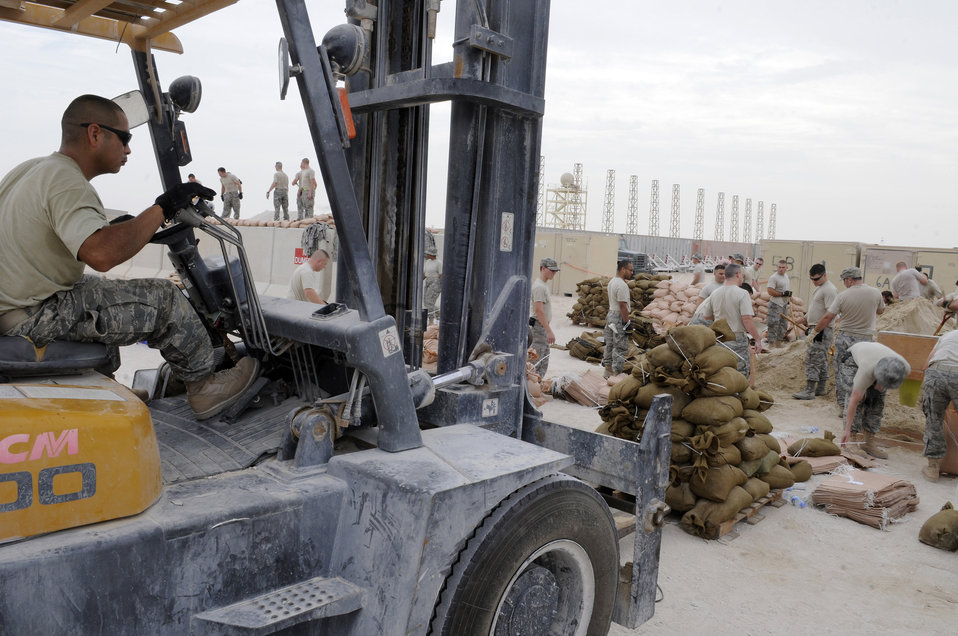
Working in the sand

Staff Sgt. Ramon Alvarez, assigned to the 379th Expeditionary Communications Squadron, picks up a pallet of sandbags Nov. 4 at an air base in Southwest Asia. The sand bags will used to fortify emergency bunkers. Sergeant Alvarez, a native of San Antonio, is deployed from Lackland Air Force Base, Texas, in support of operations Iraqi Freedom and Enduring Freedom and Joint Task Force-Horn of Africa.